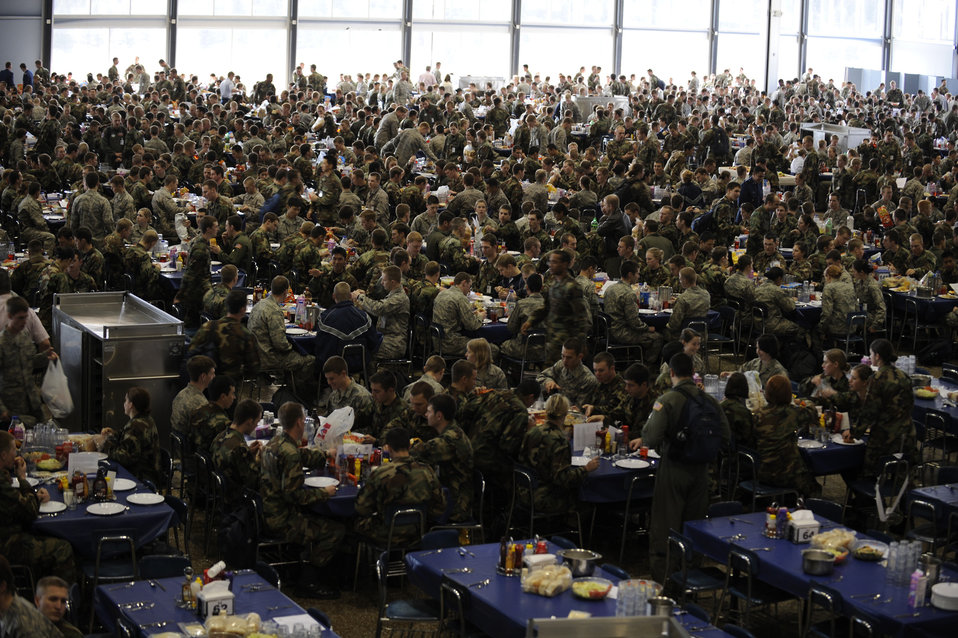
U.S.Air Force Academy Mitchell Hall Cadet Dining Facility

Cadets eat lunch Jan. 23 at Mitchell Hall Cadet Dining Facility at the U.S. Air Force Academy in Colorado Springs, Colo. The dining facility feeds approximately 4450 cadets and sits on 1.75 acres.